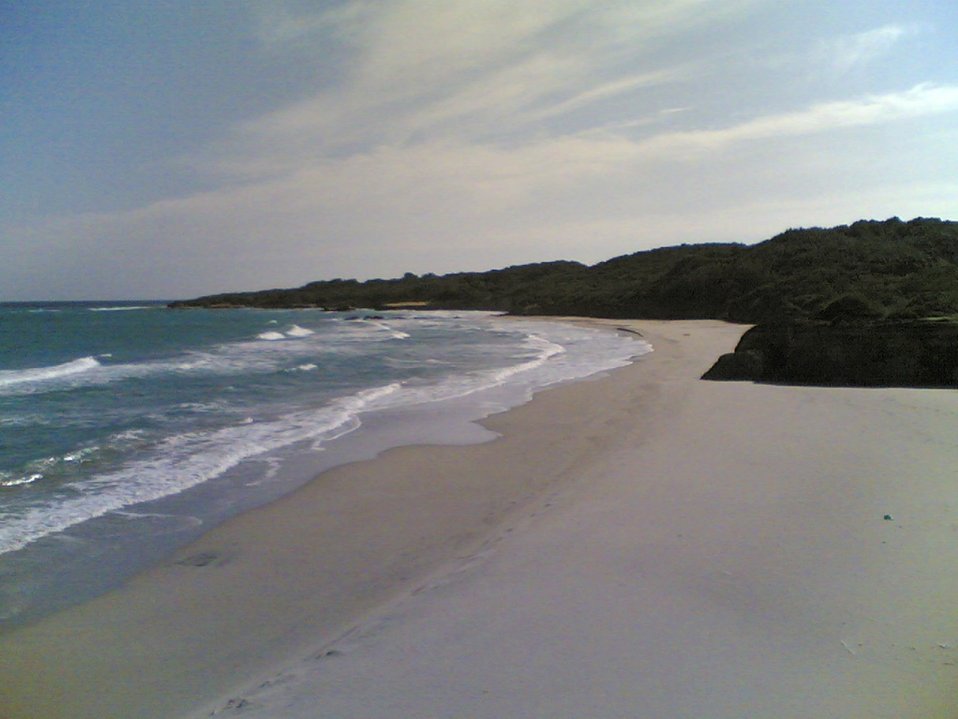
Italiano: Foto della Baia dei Turchi, parte sud, 3 novembre 2007